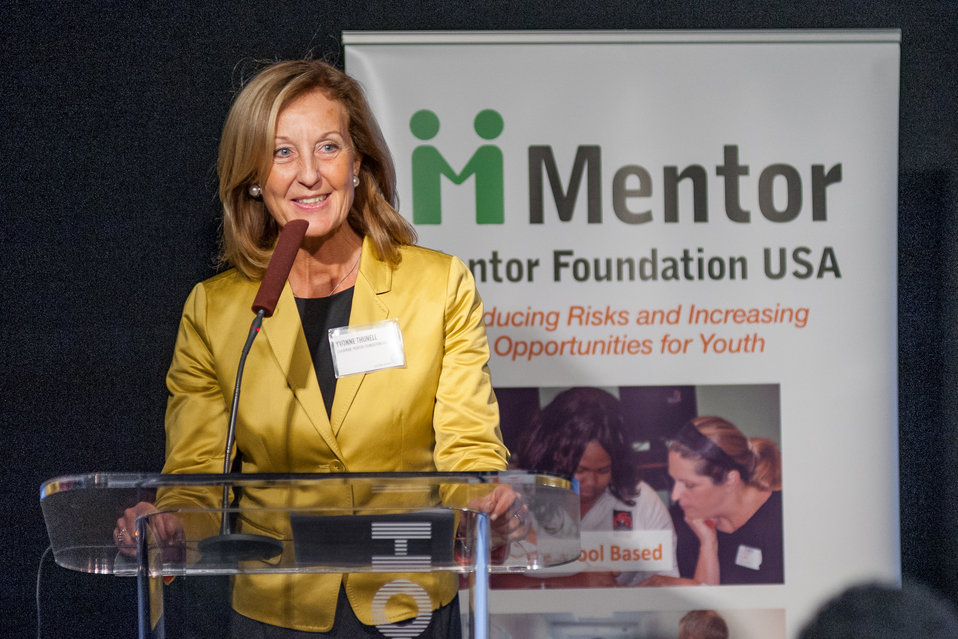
Mentor NDFW Event 2014

Mentor Foundation USA, in partnership with the National Institute on Drug Abuse (NIDA) and other key partners hosted a Youth Drug Facts Rally at the House of Sweden on Thursday, 30th January 2014. Approximately 200 students from five local high schools attended and had the opportunity to interact with top U.S. scientific experts, and inspiring guest speakers including Chairman of The Mentor Foundation Board of Trustees, Yvonne Thunell to “shatter the myths” about drugs and substance abuse, while pledging to stay drug-free.